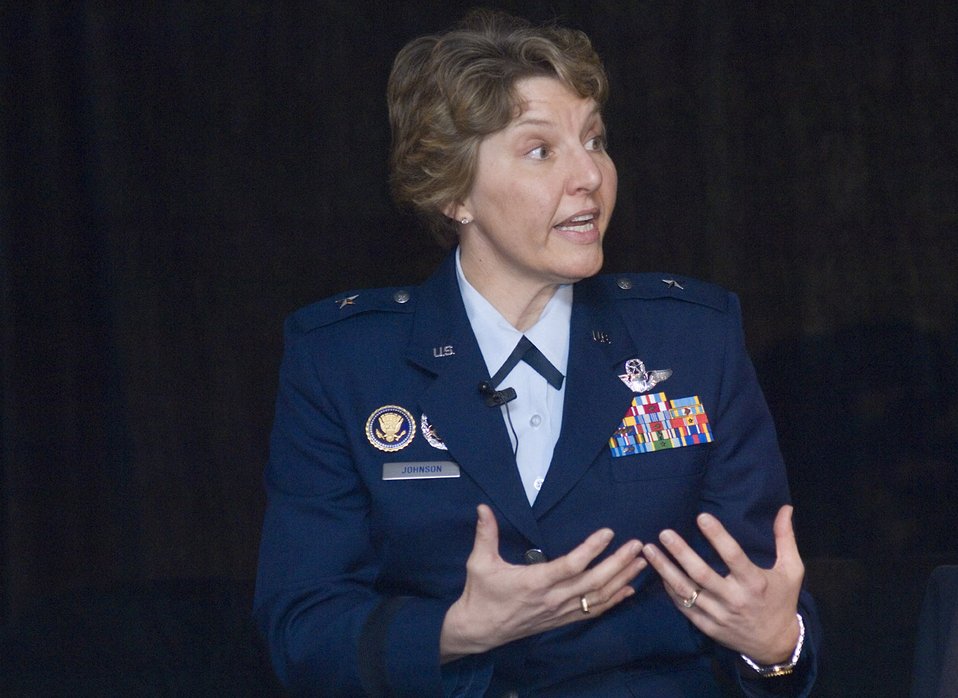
General speaks about mentorship at Women's Final Four

Brig. Gen. Michelle Johnson speaks during